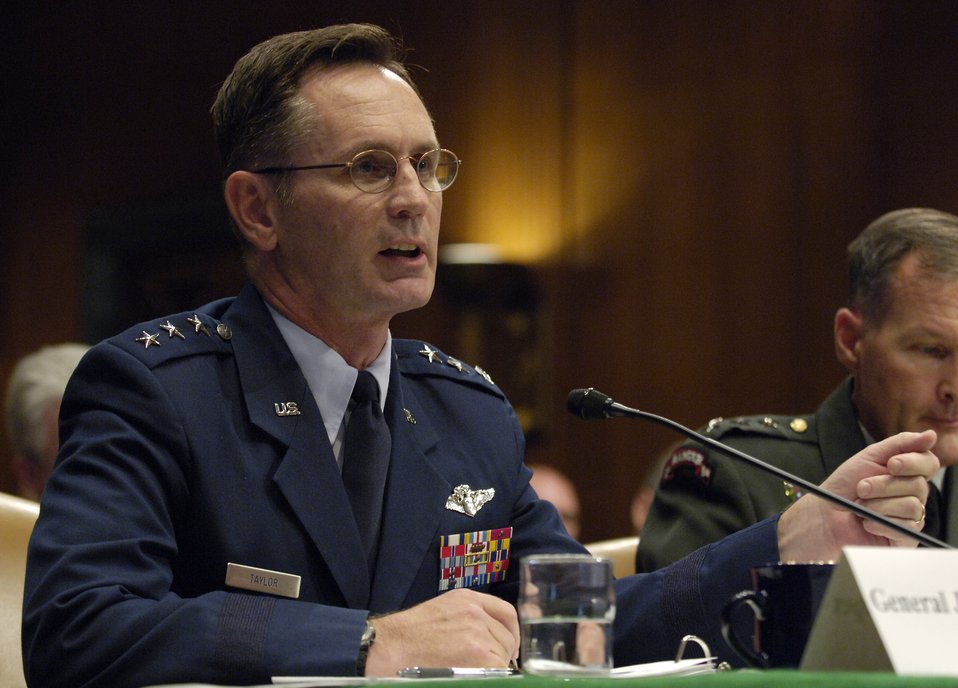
BRAC hearings

WASHINGTON -- Air Force Surgeon General Lt. Gen. (Dr.) George Peach Taylor Jr. answers questions from members of the Base Realignment and Closure Commission during a hearing Aug. 20 on Capitol Hill. The commission called the hearing to give members of the Defense Department a final opportunity to present testimony before the commission's final deliberations concerning their BRAC recommendations to the president.